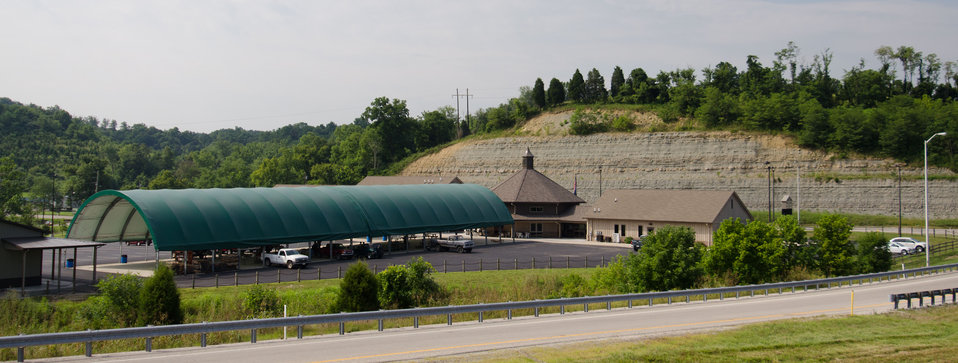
Northeast view of the Bath County Agricultural Education and Marketing Center, Owingsville, KY, on Friday, July 15, 2011. The green overhang covers the Farmer's Market and Produce Auction area. The adjoined buildings (right-left) are the Bath County Cooperative Extension, Kentucky Market Pavilion, and Education Center with commercial kitchen. The Center was the recipient of a $400,000 Rural Business Enterprise Grant. It has given farmers and producers from Bath and surrounding counties the opportunity to manufacture and market their locally grown and locally produced value-added and “Kentucky Proud” branded products, including but not limited to, fresh produce, artisan crafts and specialty food products. The Center is open year-round and allow residents to sell products in four different retail categories, including Kentucky products, regional crafts, “green” groceries and bakery/deli. Several producers expressed their gratitude for Rural Development’s assistance in making the center a reality. The project was made possible through American Recovery and Reinvestment Act of 2009 funding enacted by the 111th United States Congress in February 2009 and signed into law on February 17, 2009, by President Barack Obama.